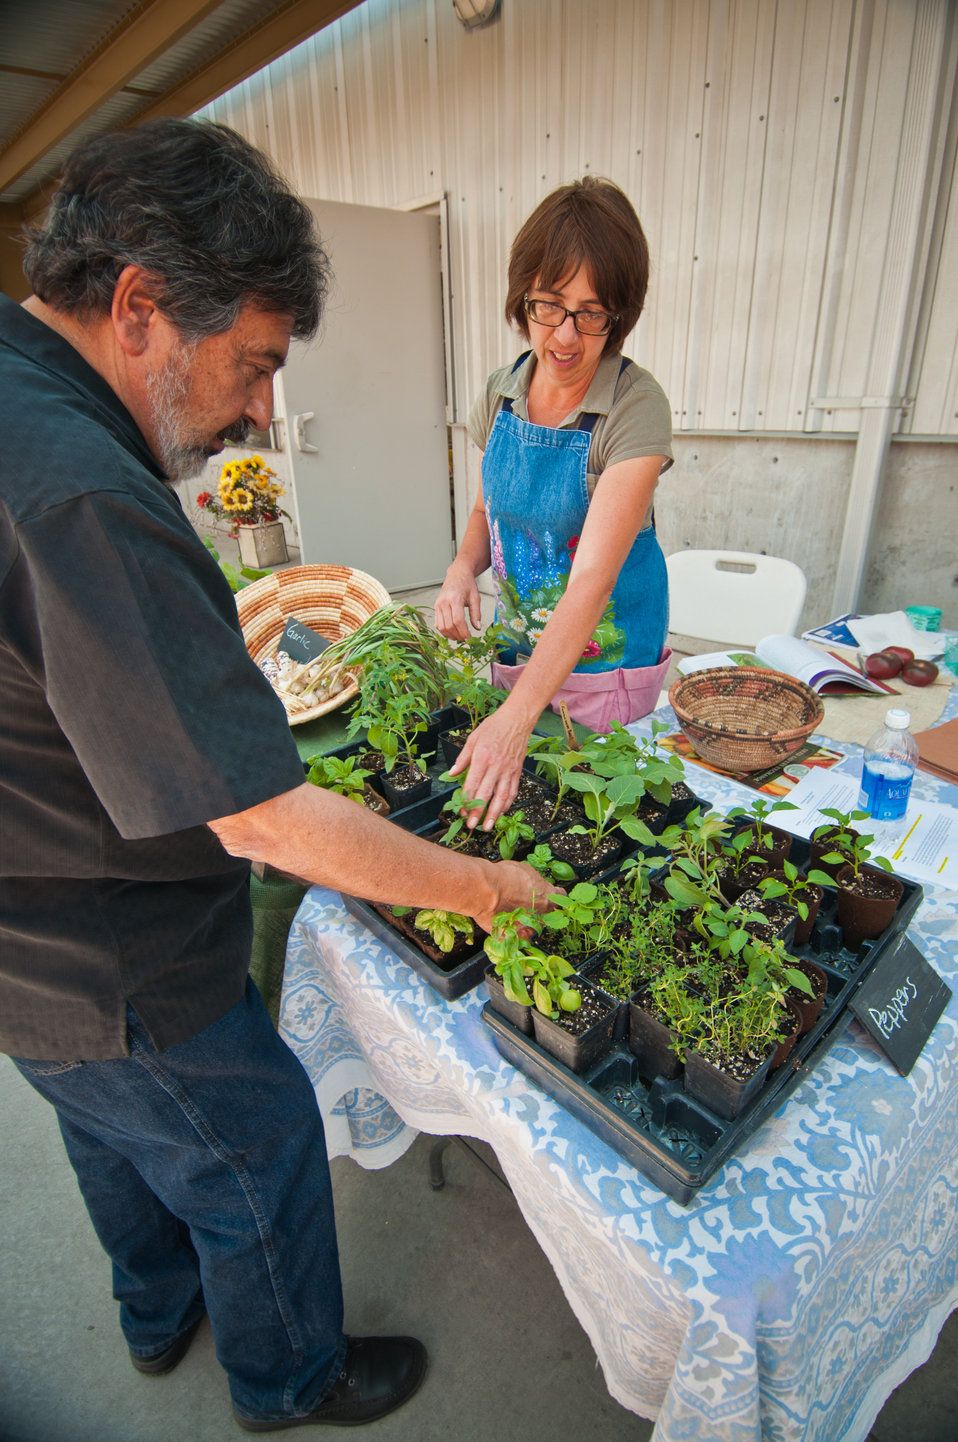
Loretta Sandoval (right) shows Santa Fe Farmers Market Program Director Sam Baca (left) basil grown on her farm Zulu's Petals Certified Organic Produce and Nursery near Dixon, NM at the Santa Fe Farmers Market in Santa Fe, NM on Tuesday, Jun. 11, 2013. Zulu’s Petals produces landraces, peppers, grains, and heirloom crops are grown primarily for farmers markets. The farm’s main goal is reintroduction of traditional, high nutrient-dense food to farm customers, encouraging seed saving, and helping people learn to grow their own gardens. The Santa Fe Farmers Market is one of the oldest, largest and most successful growers’ markets in the country. Serving farmers and producers the market brings fresh food; education promotes small farms and sustainable agriculture in Northern New Mexico.